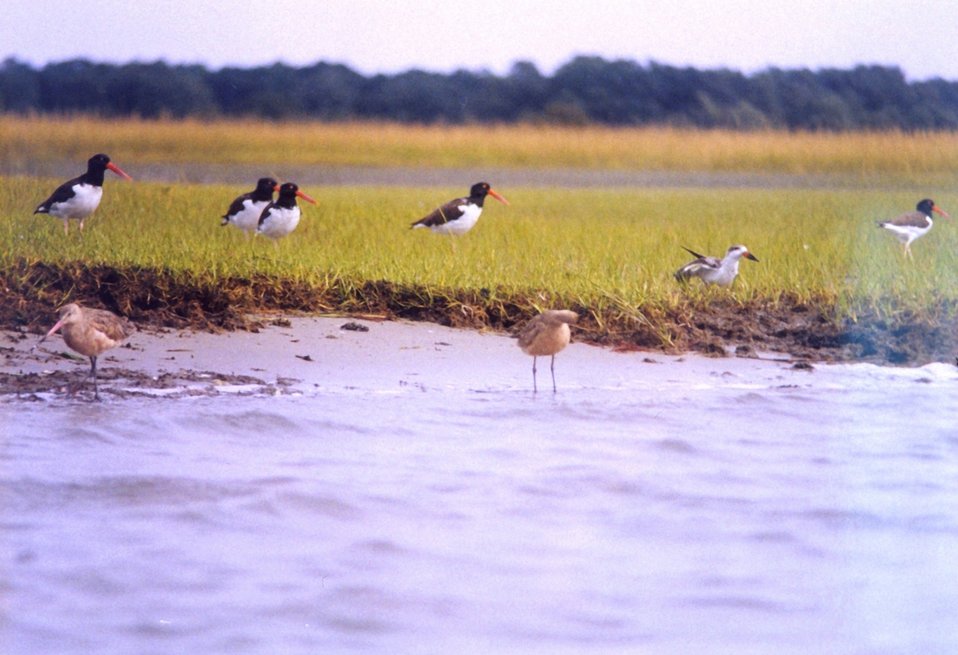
Oystercatchers.